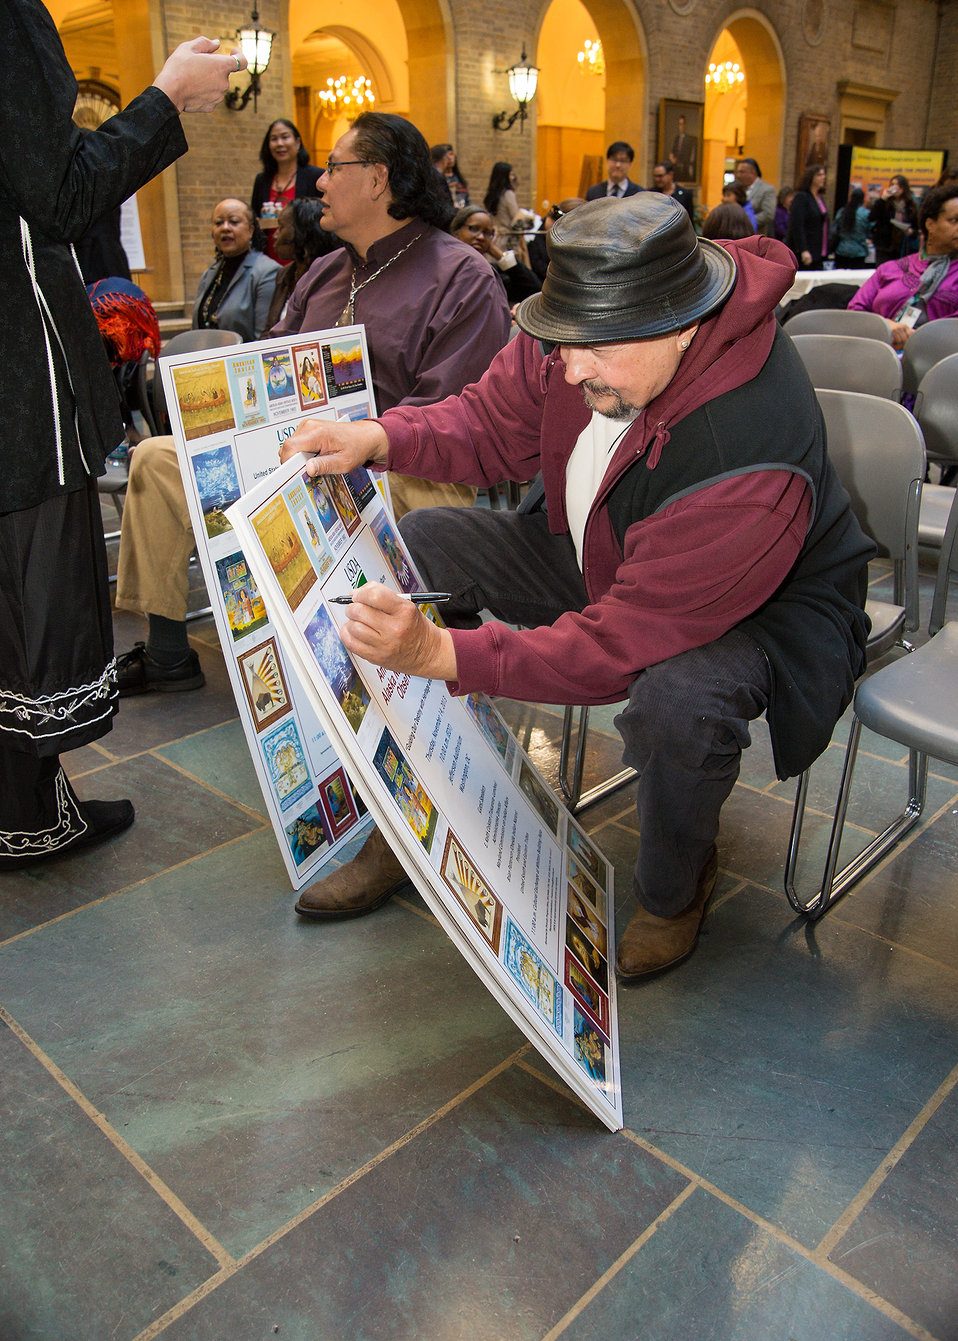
Rico Newman Choptico Band Piscataway-Conoy Tribe of Maryland signs an event poster from the 2013 American Indian and Alaska Native Heritage Observance at the USDA on Thur., Nov. 14, 2013 in Washington, DC. The theme of this year’s event 'Guiding Our Destiny with Heritage and Traditions.”